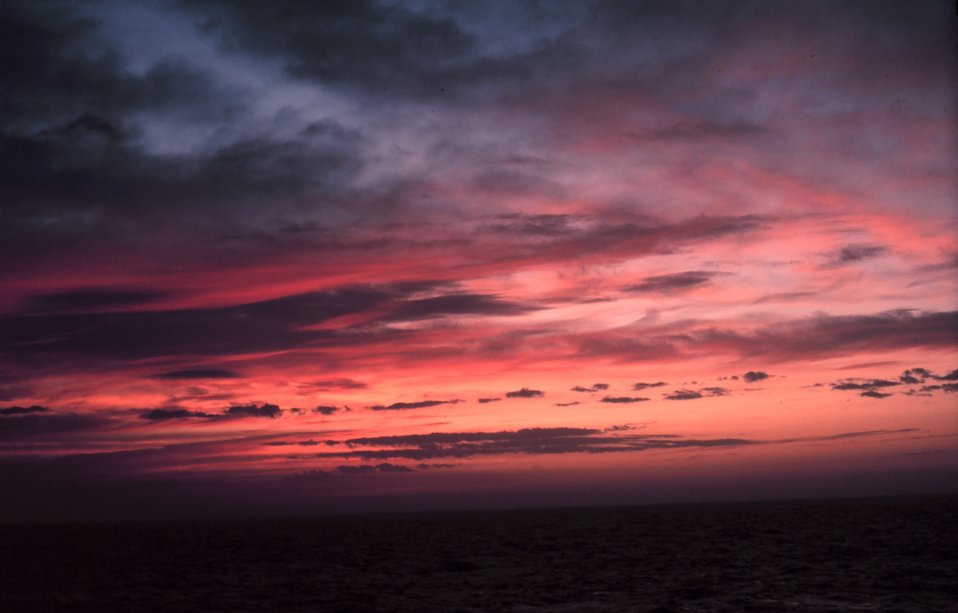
A last gasp of color decorates the sky as night approaches over the open ocean.